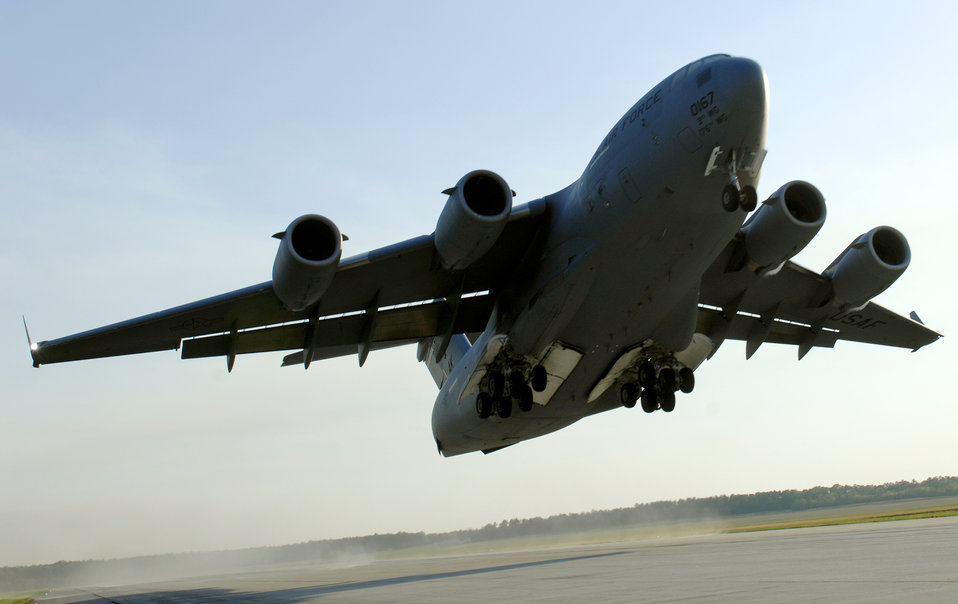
Joint training at 12,500 feet

A C-17 Globemaster III aircrew takes off April 15, 2010, from Fort Pickett Maneuver Training Center, Va. The plane, carrying a group of Navy SEALs, was part of a joint training exercise with 517th Airlift Squadron members from Elmendorf Air Force Base, Alaska and SEAL Team 10.